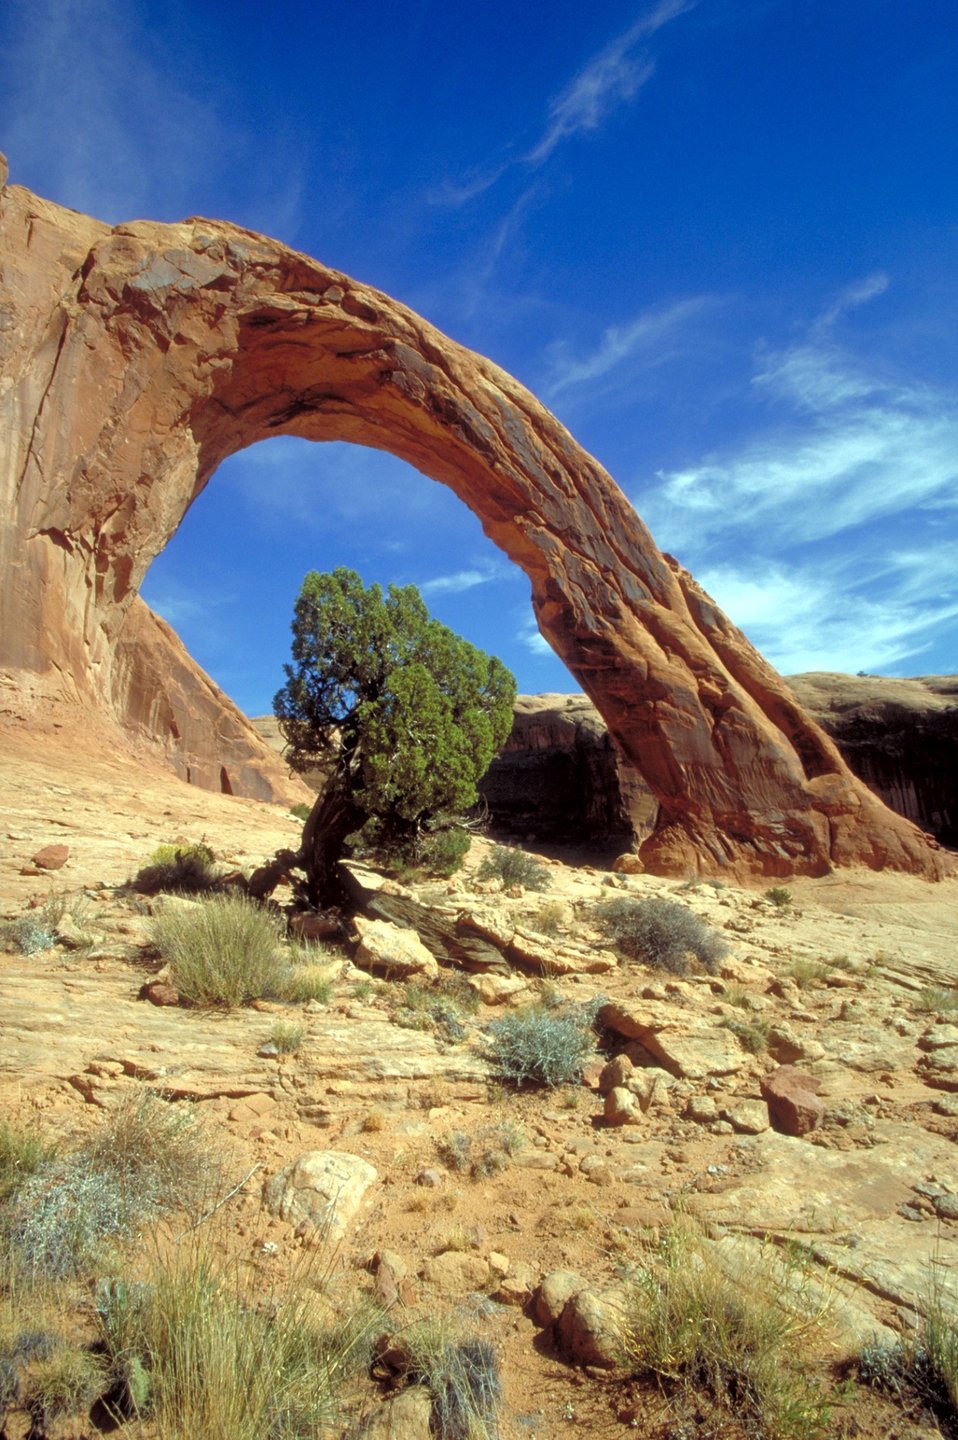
Corona Arch near Moab, Utah.